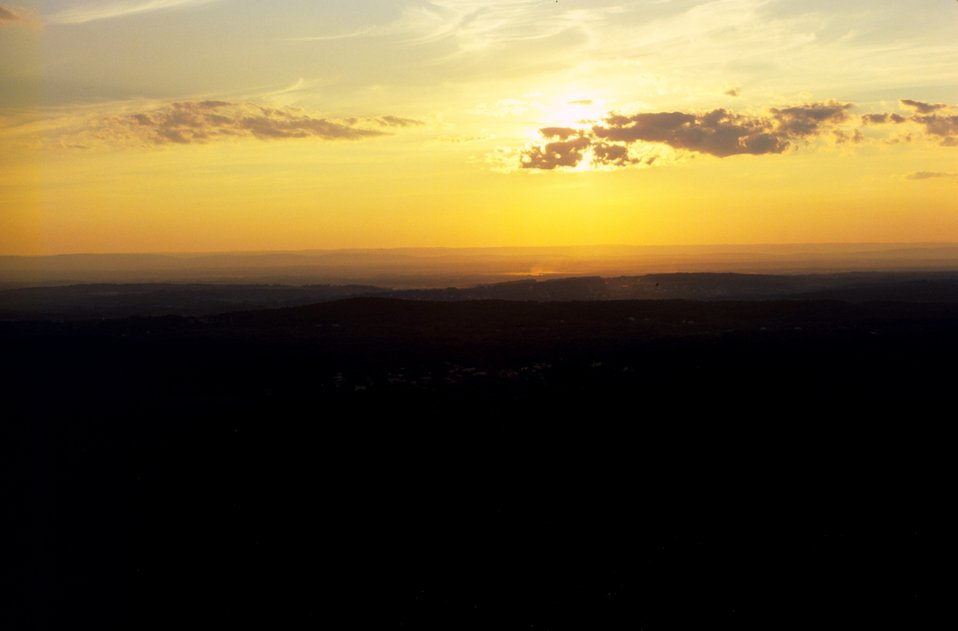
Sunset as seen by a lightkeeper from a Bilby tower.